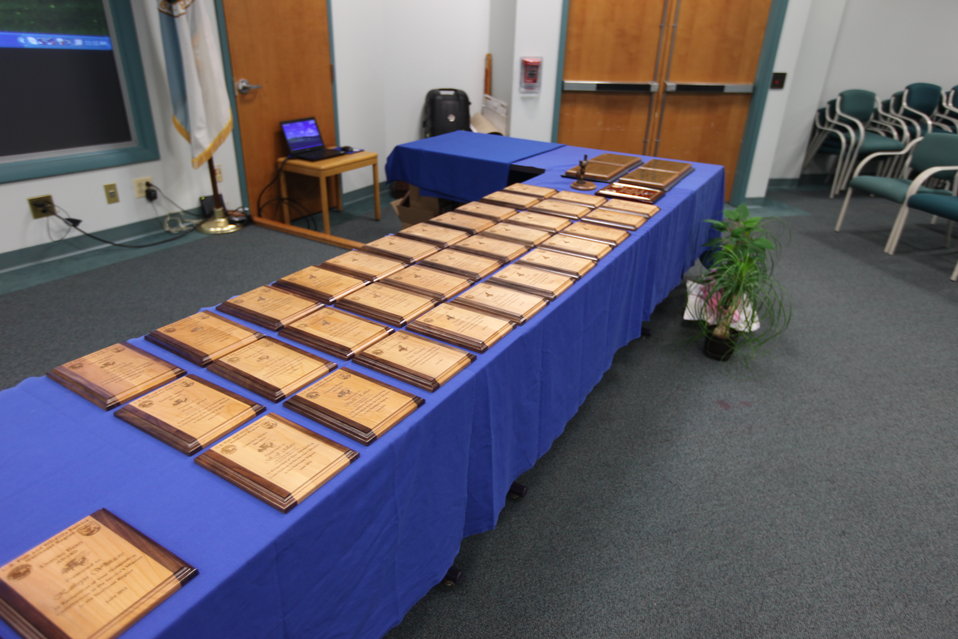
Northeast Region Employee Appreciation Awards